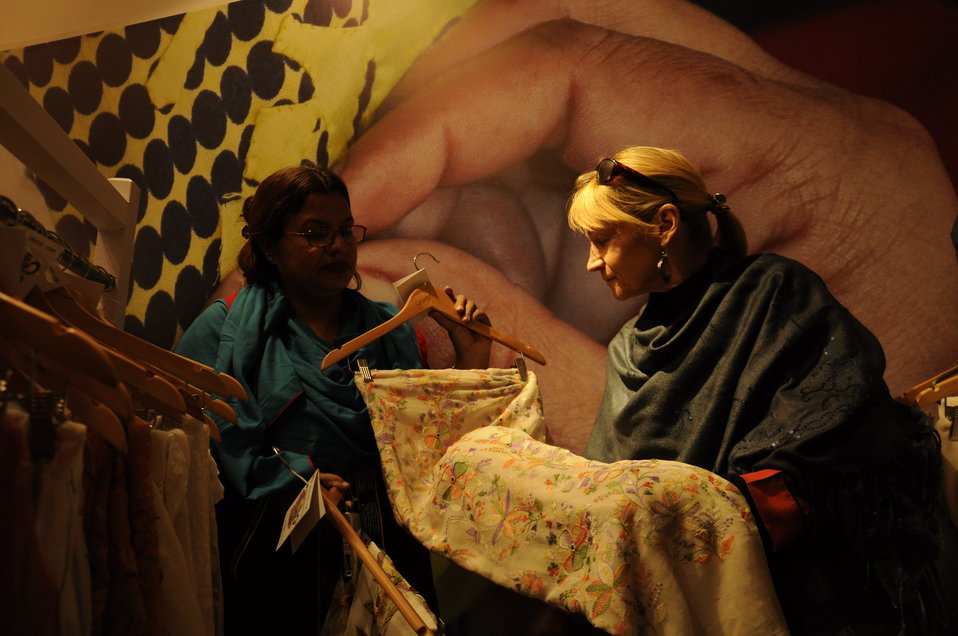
Ms. Susan Slomback, Chief of Party USAID's Entrepreneurs Project, admiring the delicacy in the Hand Embellished Fabrics displayed at Stitching and Chai Exhibition